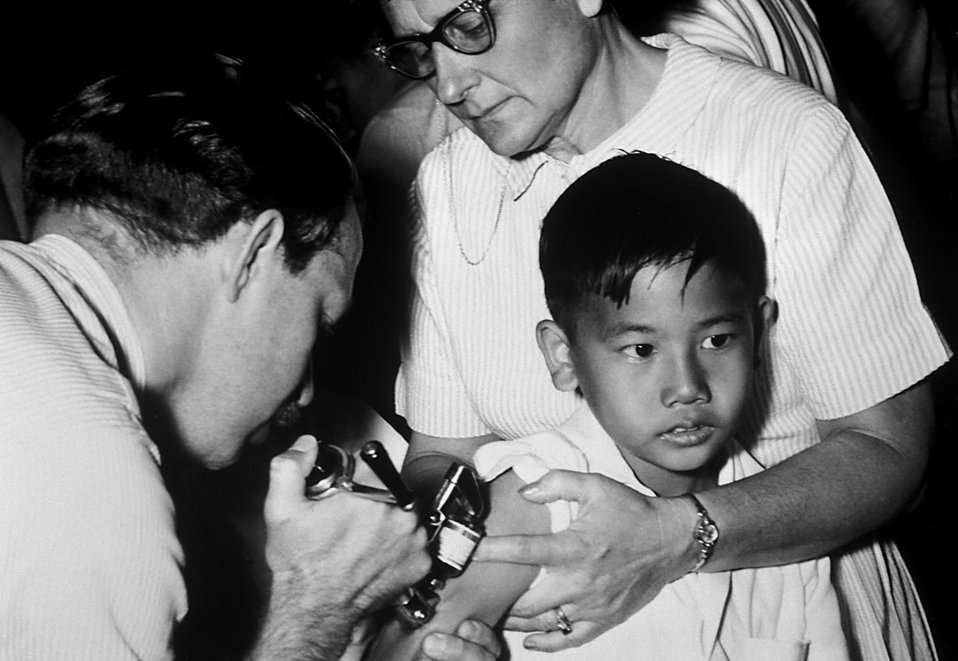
A jet injector gun being used during mass smallpox immunization procedures.